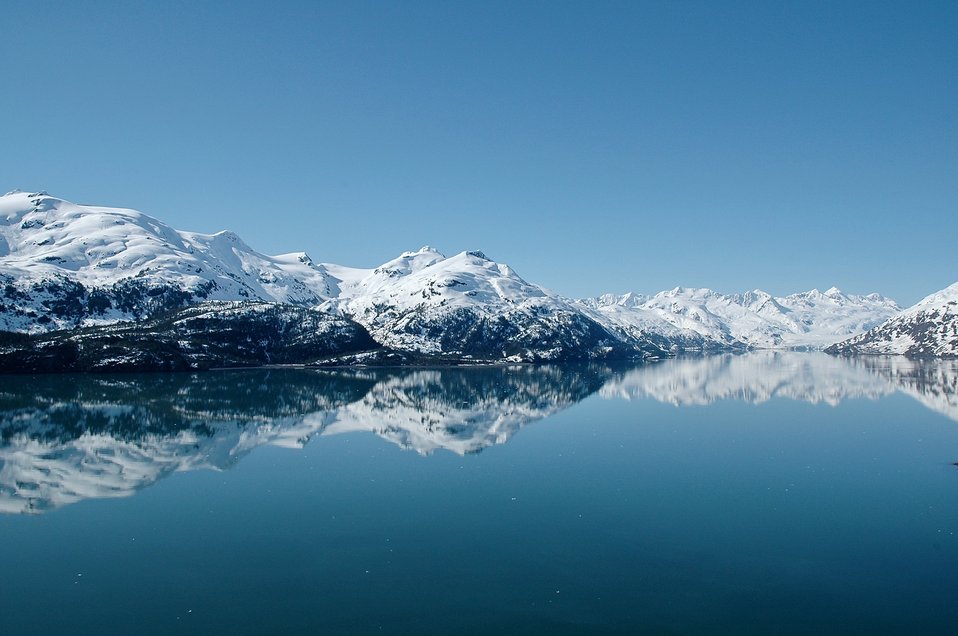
Aerial photograph. Near mirror-like reflectivity in Harriman Fjord. Note the glacier at the head of the fjord.